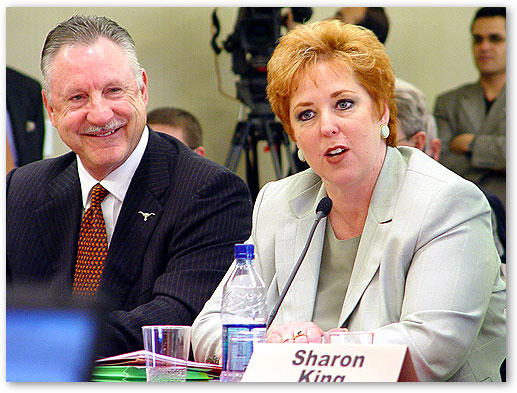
Mr. Michael Moncrief, Mayor of the City of Fort Worth, Texas. Ms. Lori Panzino-Tillery, Division Chief, Franchise Programs, San Bernardino County, National Association of Telecommunications Officers and Advisors.